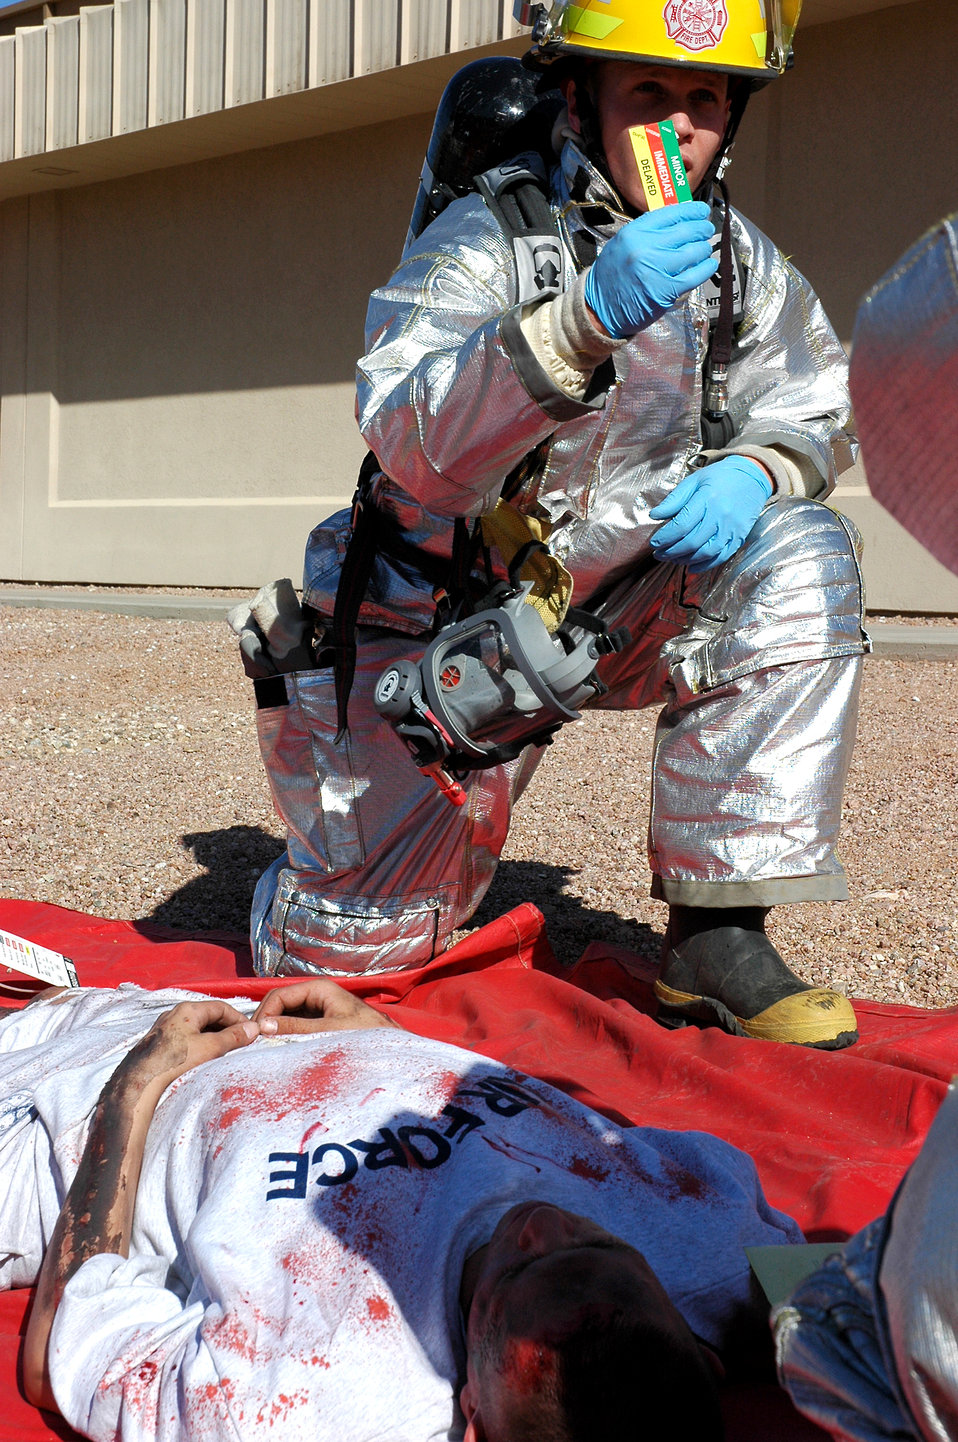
Exercise, exercise, exercise

DAVIS-MONTHAN AIR FORCE BASE, Ariz. (AFPN) -- Senior Airman Brady White helps a